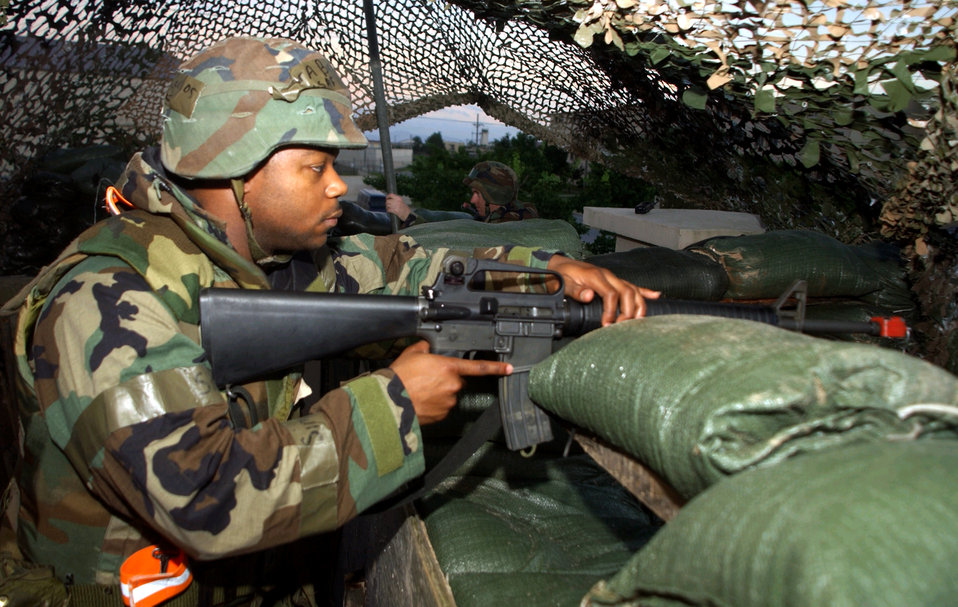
Ready for action

KUNSAN AIR BASE, South Korea -- Senior Airman Carlos Brown stands ready to defend a compound during a Korean peninsula combat evalution readiness exercise here July 19. Airman Brown is a member of the 8th Communications Squadron.